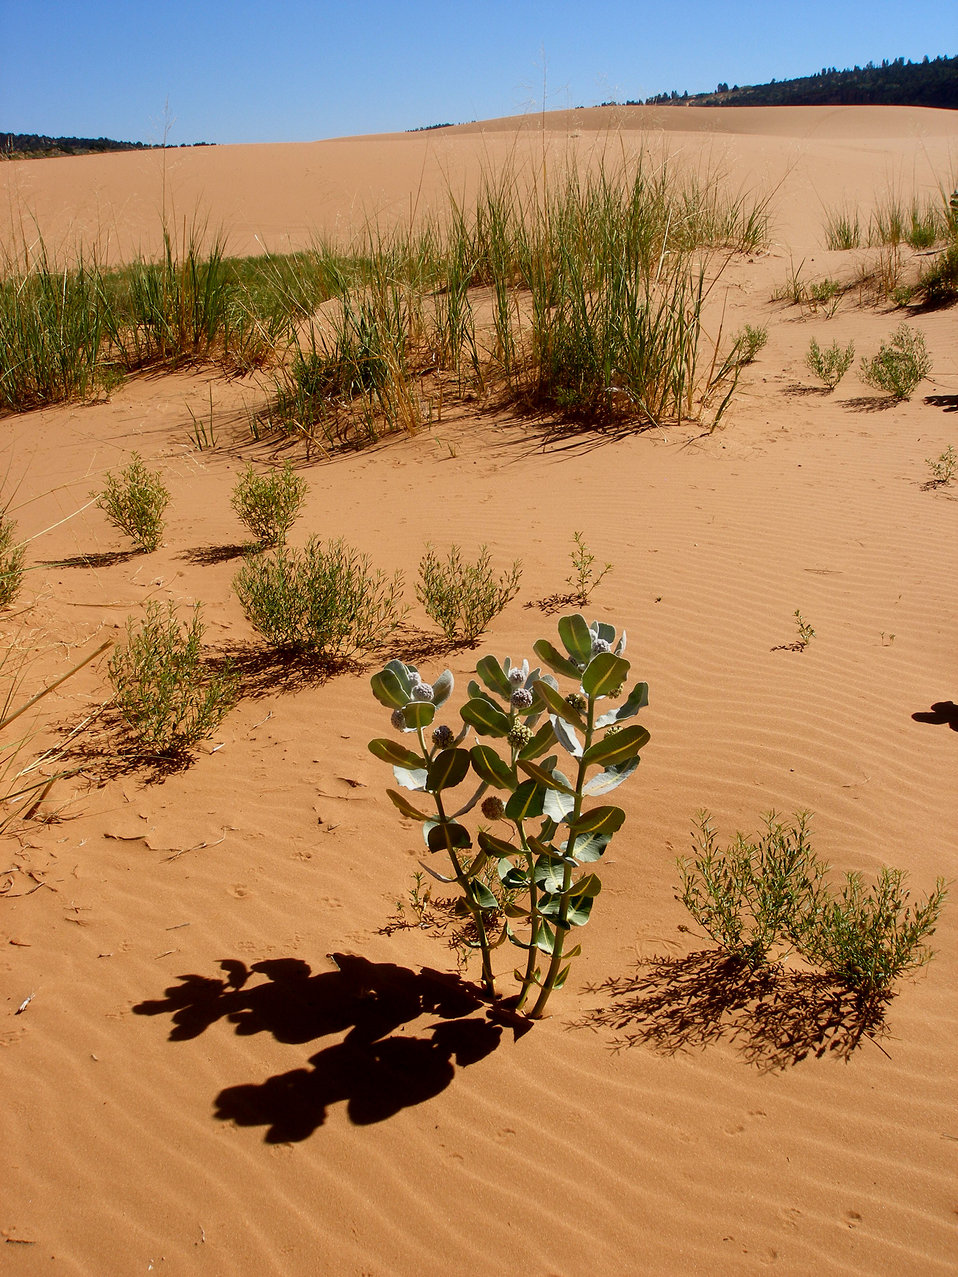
Welsh milkweed (Asclepias welshii) Habitat

This species is restricted to active sand dunes derived from Navajo Sandstone in sagebrush, juniper and Ponderosa pine communities between 5,000 and 6,230 ft. in elevation. It is endemic to Kane County, UT, and Coconino, Navajo & Apache counties, AZ. The Welsh milkweed is listed threatened.